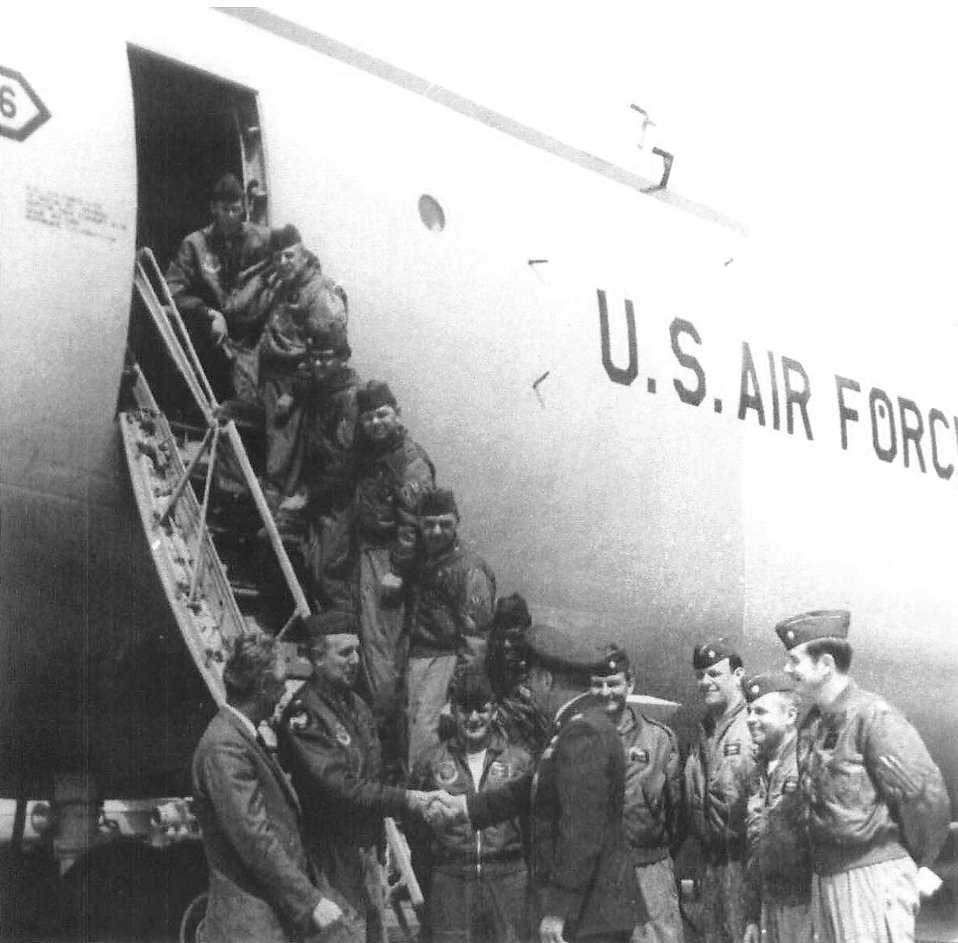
C-5M flies in on the wings of Dover AFB heritage

The crew who flew the first C-5 Galaxy into Dover Air Force Base, Del., poses in front of the new Galaxy on Dover's flighline April 16, 1971. Four of the crewmembers, Tom Dennis, Les Finney, Dr. Willie Curtis and Bob Valeski, were present once again on Dover AFB to witness a new era of military airlift Feb. 9, when Gen. Arthur J. Lichte, Air Mobility Command commander, delivered Team Dover's first C-5M Super Galaxy named Spirit of Global Reach.